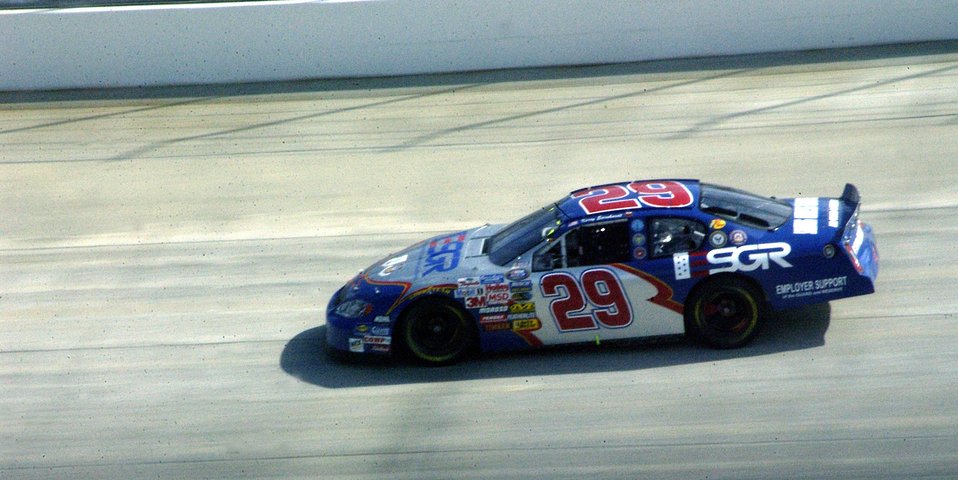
Guard, Reserve on fast track

DOVER INTERNATIONAL SPEEDWAY, Del. -- Flying the colors of the Employer Support of the Guard and Reserve, driver Kerry Earnhardt races here Sept. 25 during the NASCAR Busch Series Race. ESGR is a Defense Department volunteer organization that provides free education and consultation for employers of guardsmen and reservists. Its goal is to support America's employers who share their employees with the nation to ensure national security. Mr. Earnhardt finished 23rd.